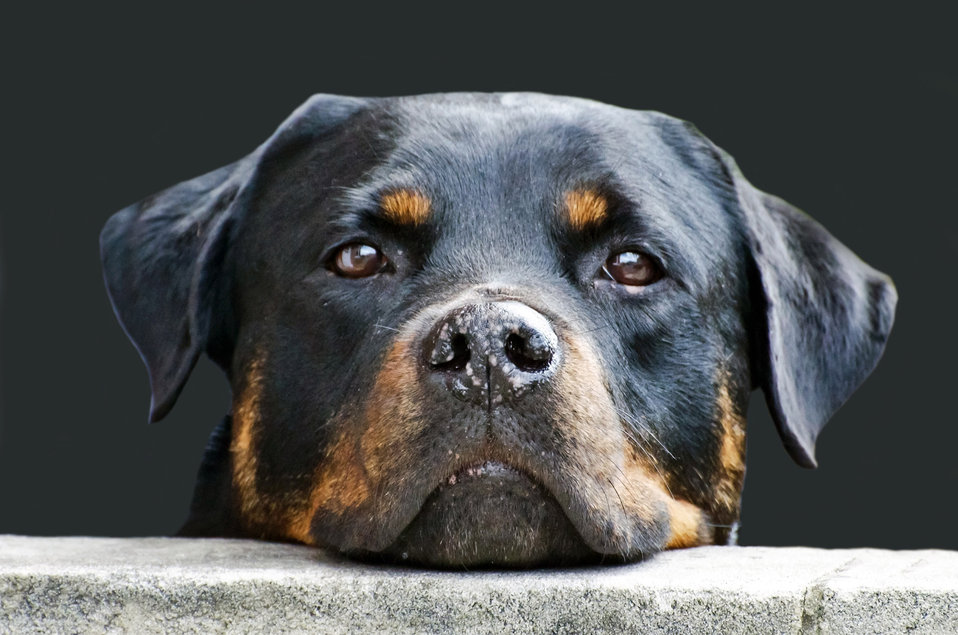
Dog - rottweiler.